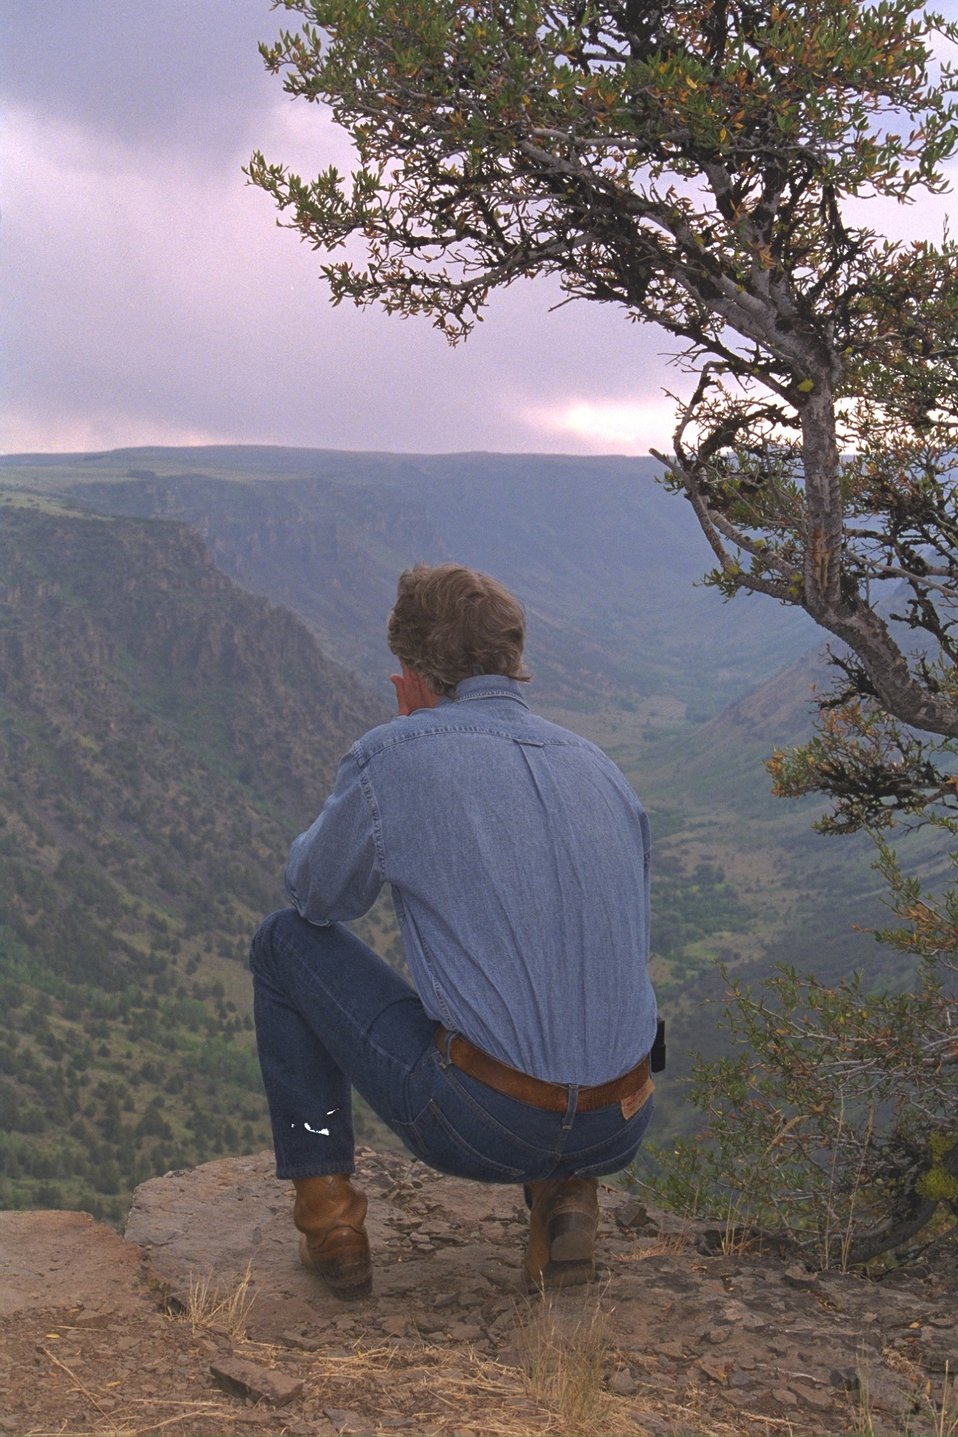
Governor Kitzhaber at Big Indian Gorge overlook.